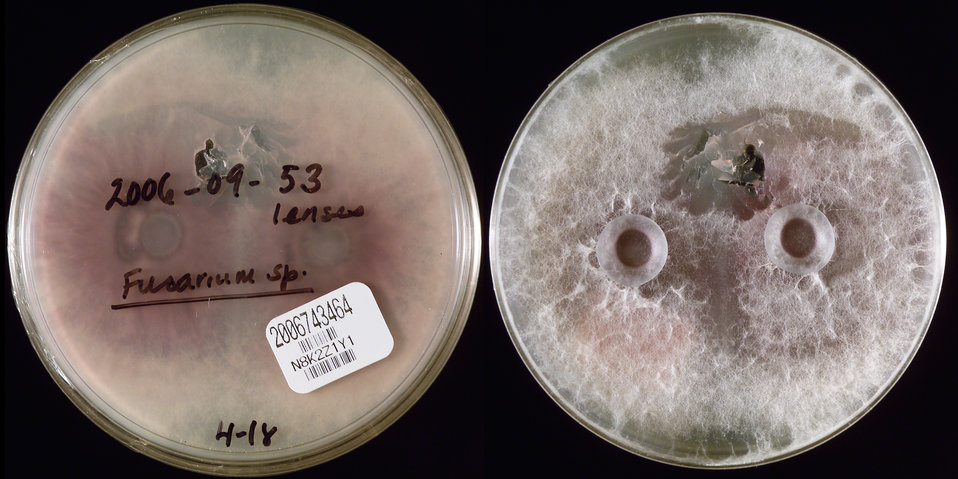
This image depicted two sides of a Petri dish, which had been inoculated with specimens consisting of the right and left contact lenses, visible on the culture medium, obtained from a Tennessee Fusarium keratitis-patient, and had subsequently grown a filamentous colony of Fusarium oxysporum fungal organisms. The type of agar medium in the case of this specimen was unknown. While it is not unusual for Fusarium to cause keratitis, it was the number of affected individuals, which had increased dramatically, predominantly in persons wearing contact lenses, that had warranted this epidemiologic study. The laboratory received cultures which came from two sources: Fusarium spp. isolated from the eyes of patients with fungal keratitis, and cultures from contact lenses, cases and/or lens solution.